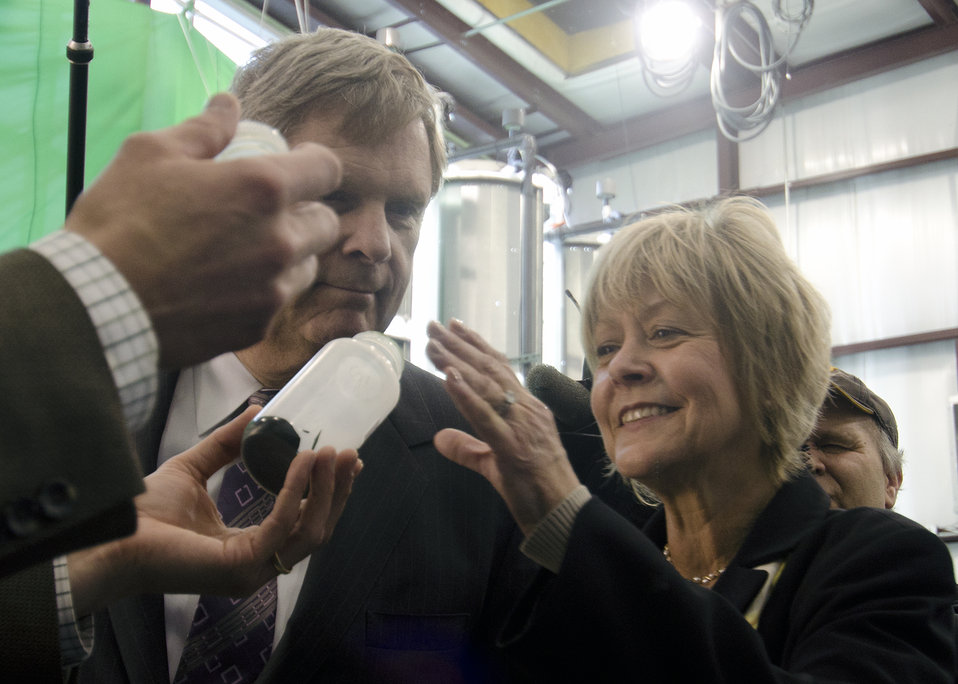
Agriculture Secretary Tom Vilsack (left) and his wife Christie look over an algae sample produced at the BioProcess Algae facility at Green Plains Renewable Energy (GPRE), Inc. on Friday, Apr. 15, 2011 in Shenandoah, IA. Secretary Vilsack spoke at the Grand Opening of Phase II at GPRE. Phase II is a key component in the commercial scale photo bioreactors/harvesters during a tour of the facility. Secretary was at the facility for the grand opening ceremony The operation is co-located within an GPRE’s ethanol factory and where BioProcess Algae technology is used to waste products; carbon dioxide, recycled heat and water to mass-produce algae. Algae from this facility are used for animal feeds, pharmaceutical and beauty products.